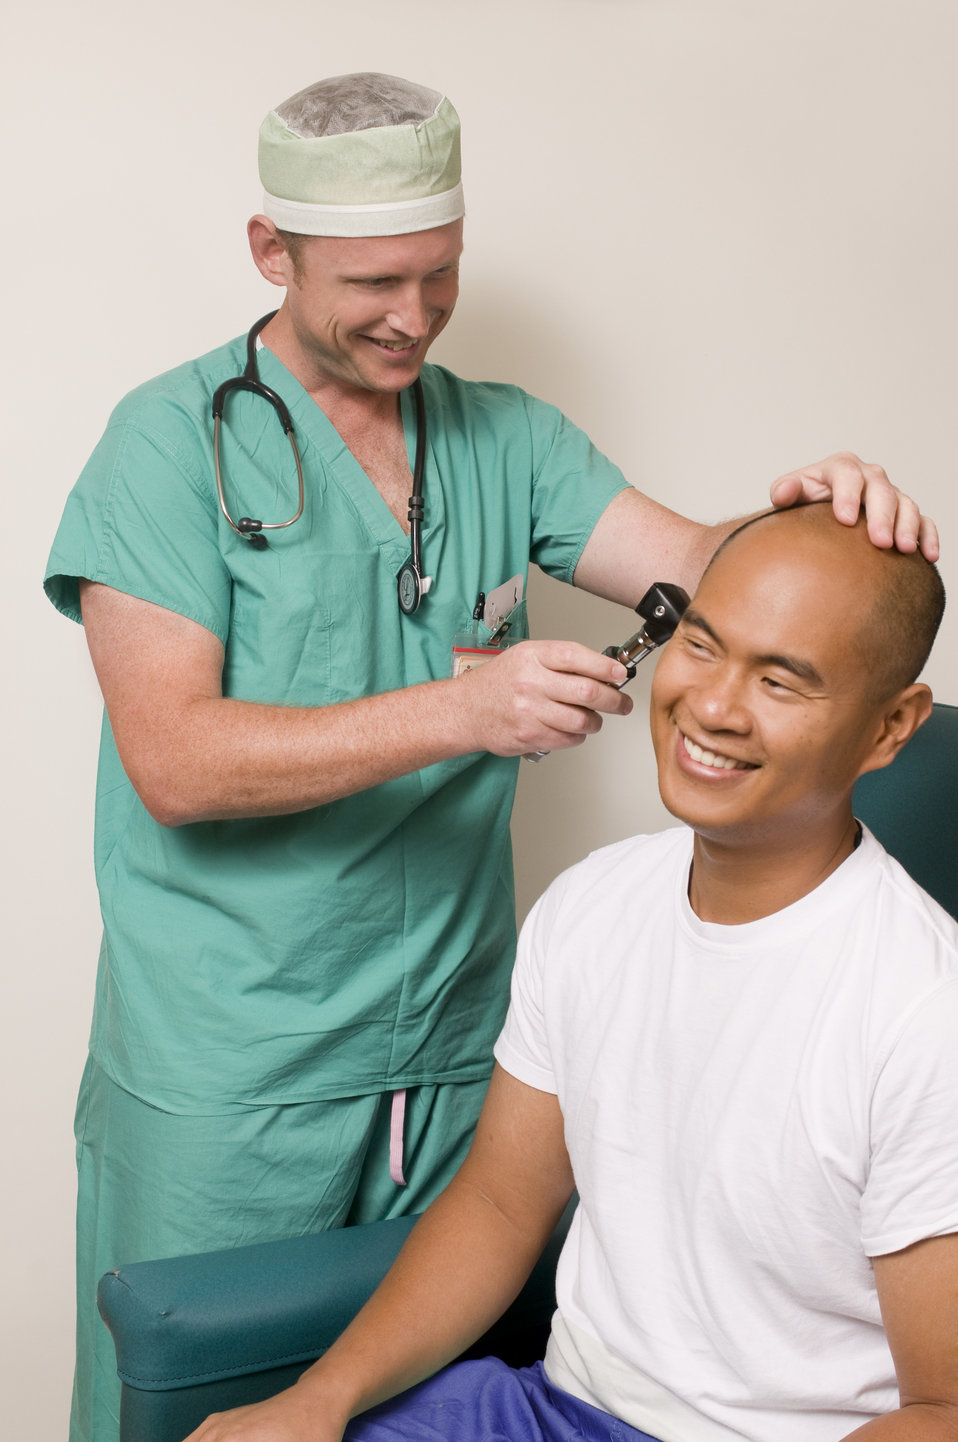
This image depicts a male clinician conducting an examination of a male patient's right ear, using an otoscope, which he'd inserted into the right ear canal.